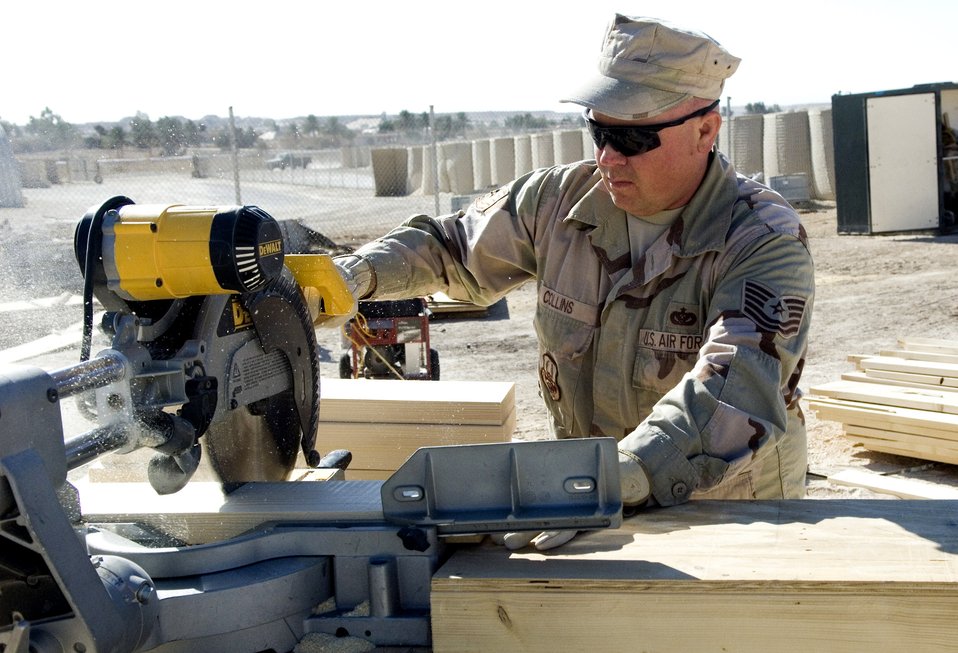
Air Force engineers improve Marine quality of life in Iraq

Tech. Sgt. Chris Collins cuts a 2-by-6 piece of wood to use as a frame for a bench Nov. 24 at Al Asad Air Base, Iraq. REDHORSE Airmen are currently working approximately $9.8 million in projects here. Sergeant Collins, a 557th Expeditionary REDHORSE utilities technician, is deployed from Minot Air Force Base, N.D.